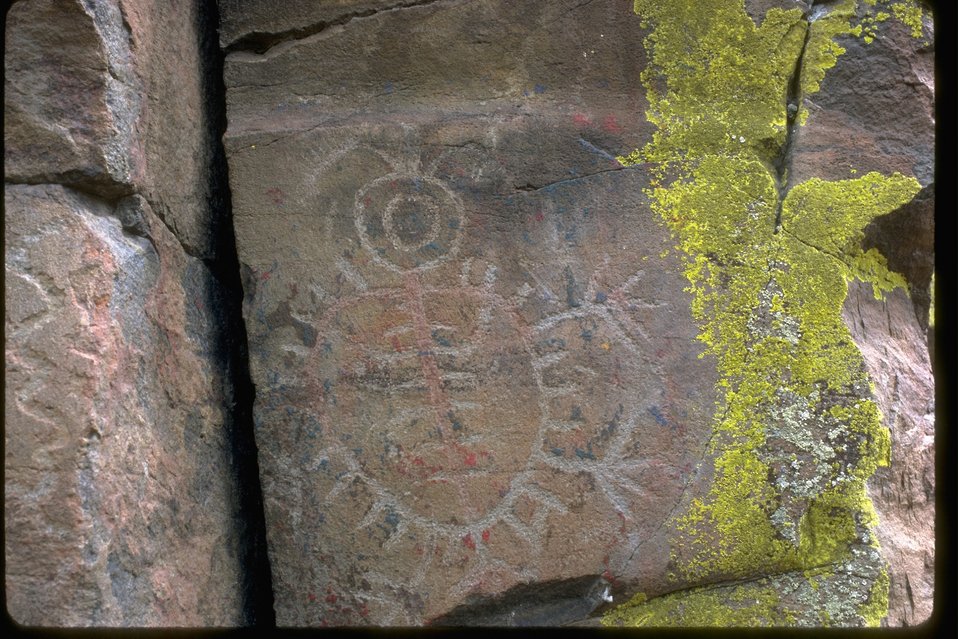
Rock Art.